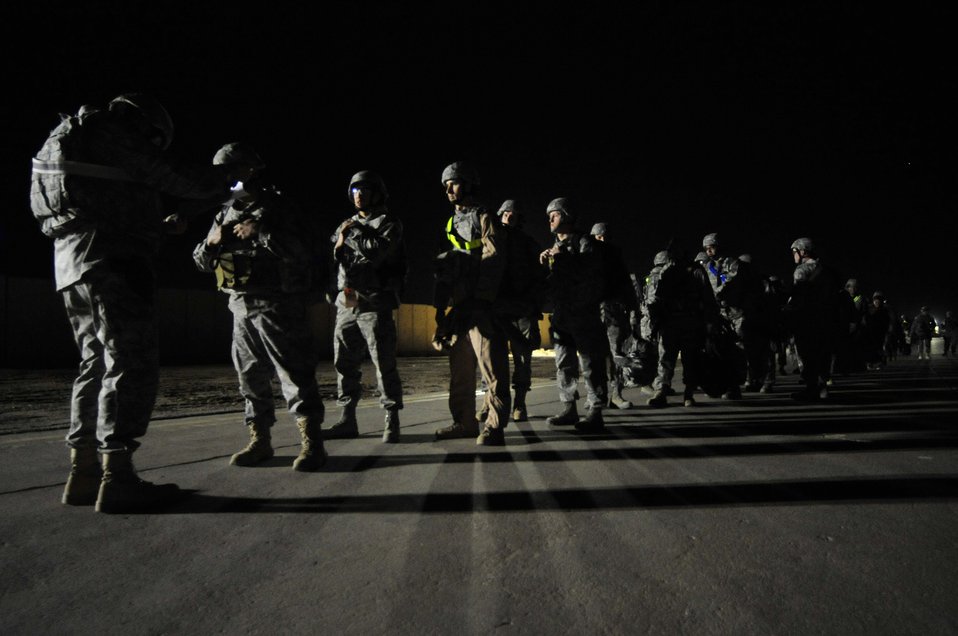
Last Airmen flying out of Iraq

Airmen assigned to the 407th Air Expeditionary Group prepare to board a C-17 Globemaster III Dec. 18, 2011, at Ali Air Base, Iraq. The Airmen are the last service members to leave Iraq. Since 2003, more than one million service members have served in Iraq.